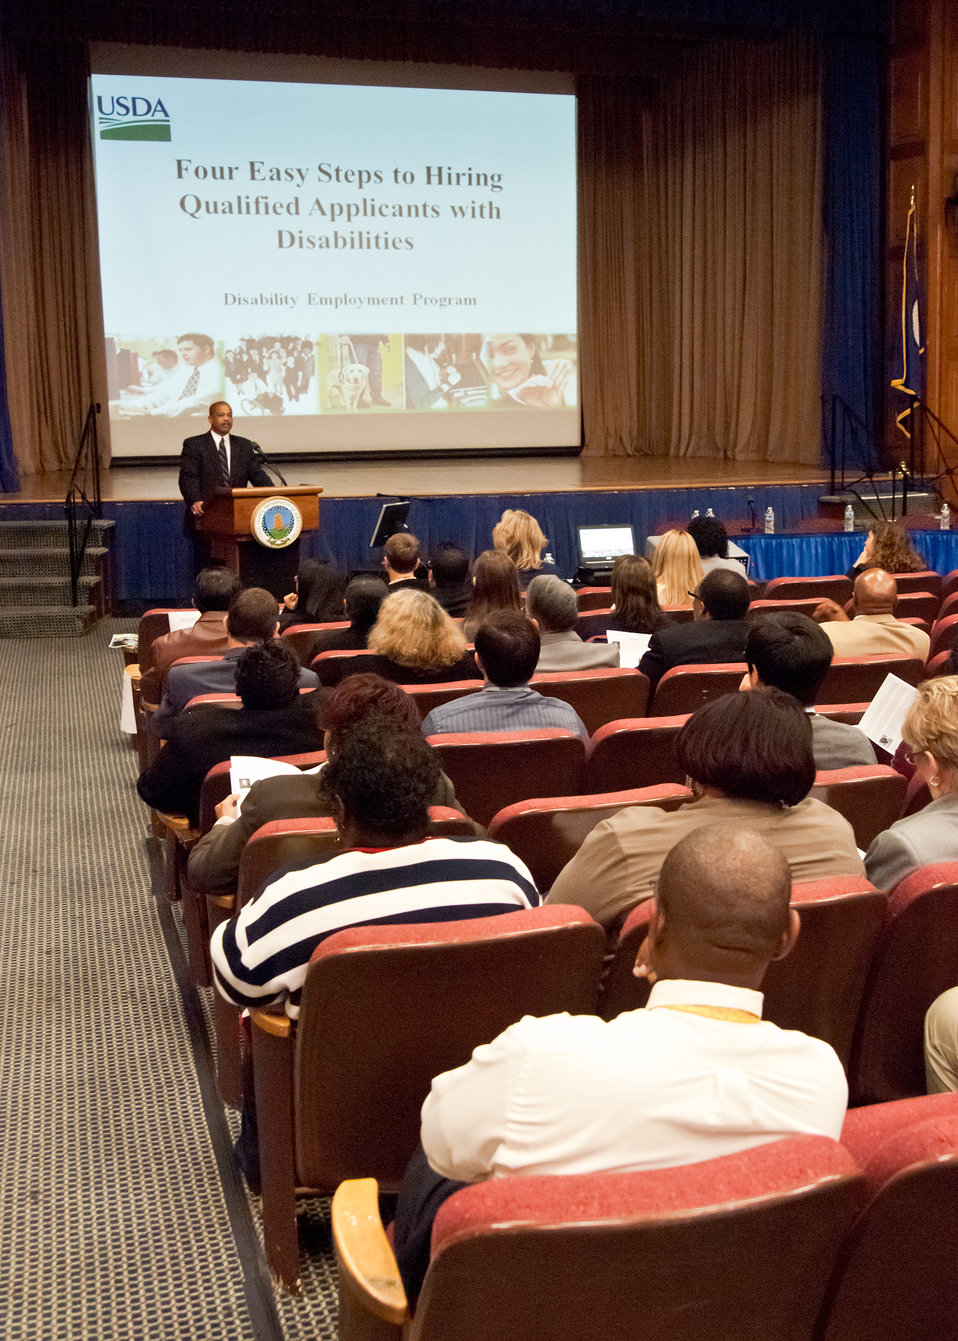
William P. Milton, Jr., Deputy Director, Office of Human Resources Management explained the “Four Easy Steps to Hiring Qualified Applicants with Disabilities” to USDA employees during National Disability Employment Awareness Month event in Washington, DC, on Wednesday, October 5, 2011. Agriculture Secretary Tom Vilsack is dedicated to establishing the USDA as the lead Federal agency in employing individuals with disabilities. The theme for the event is “Profit by Investing in Workers with Disabilities.” USDA is committed to ensuring that all our programs are accessible and inclusive of individuals with disabilities.